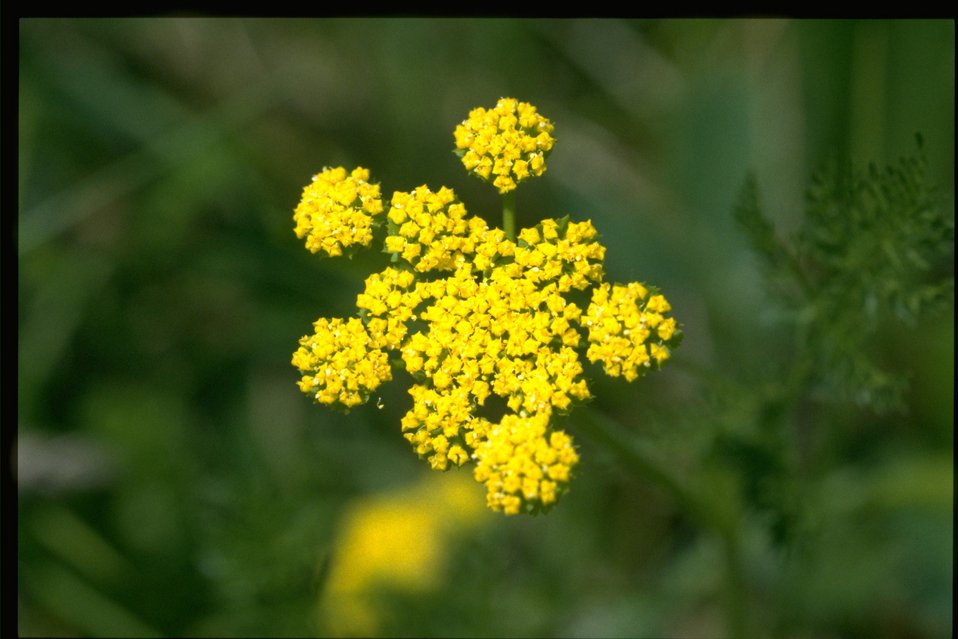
Closeup shot of Lomatium utriculatum.